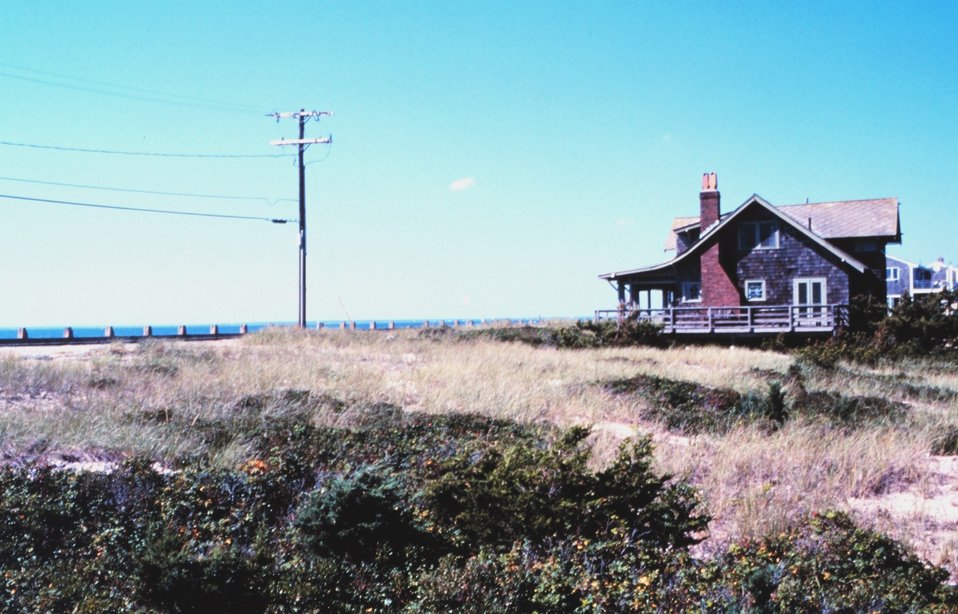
Chapaquoit Beach, West Falmouth